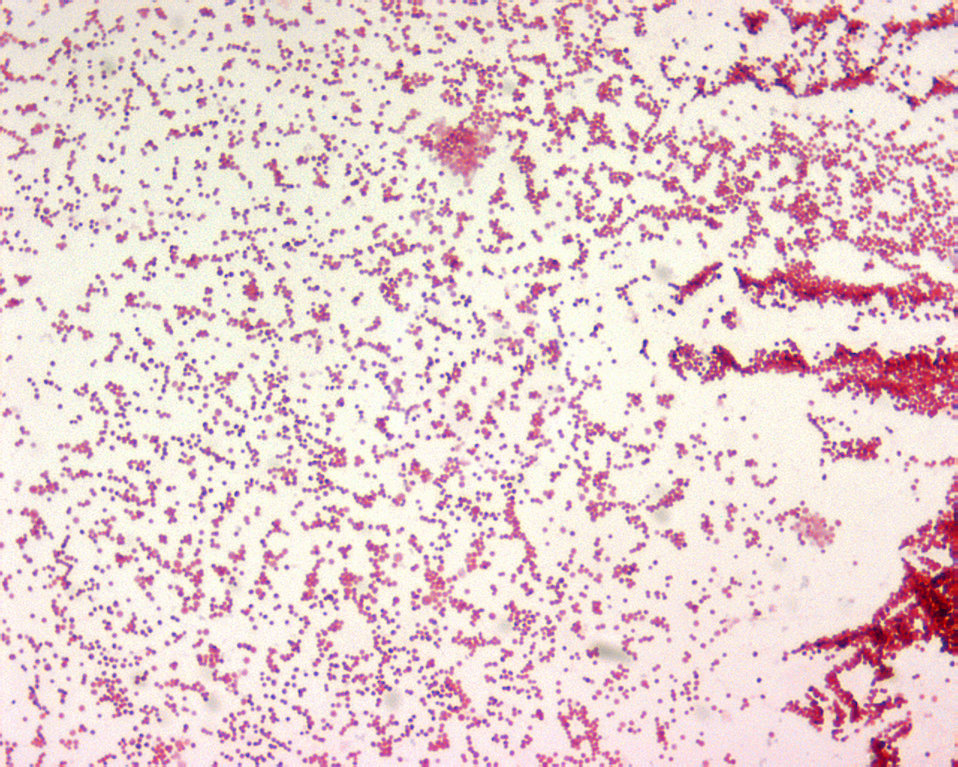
Francisella tularensis is gram-negative in its staining morphology.